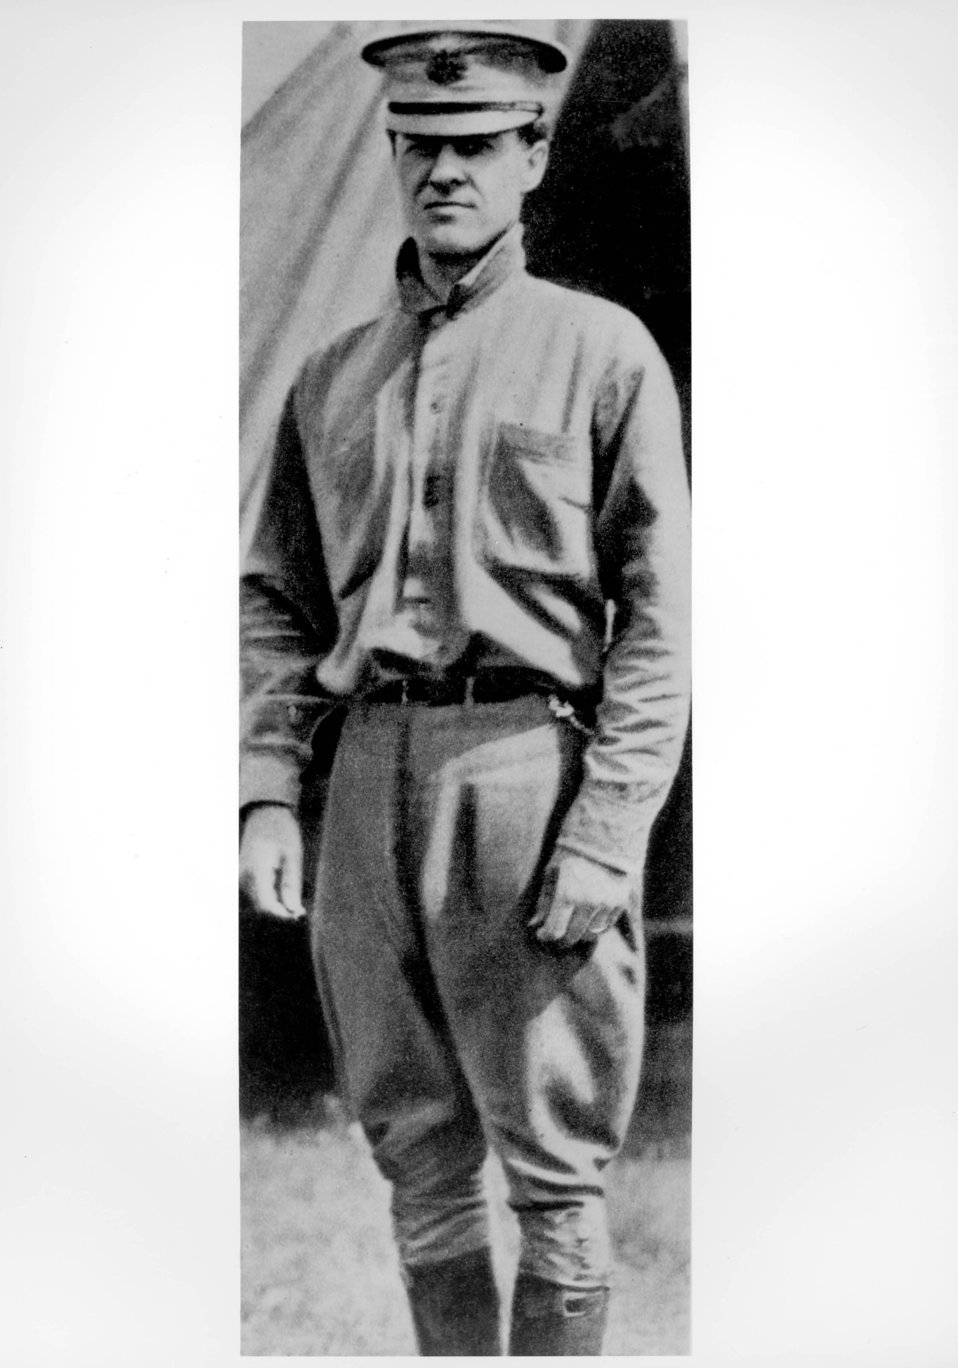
Lt. Benjamin D. Foulois

EARLY YEARS -- Lt. Benjamin D. Foulois about to fly with Orville Wright, 1909 He was also one of the first three officers in the Army to operate the first military airplane purchased by the Government from the Wright Brothers in 1909. He accompanied Orville Wright on the final trial flight from Fort Myer to Alexandria, Va., breaking three world's records - speed, altitude and duration cross-country.